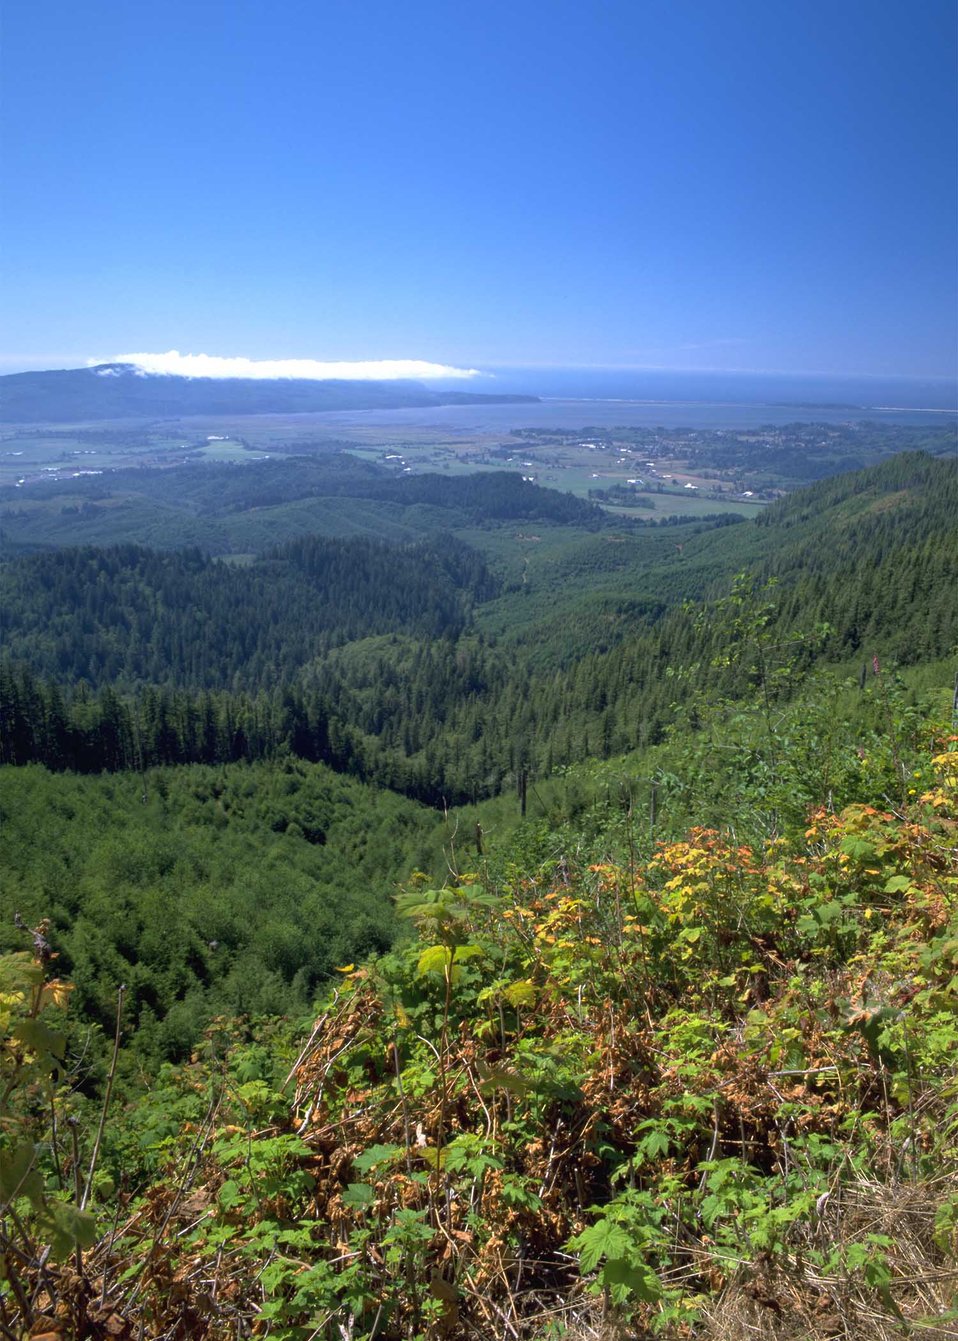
Scenic view of Tillamook watershed, Tillamook, Oregon.